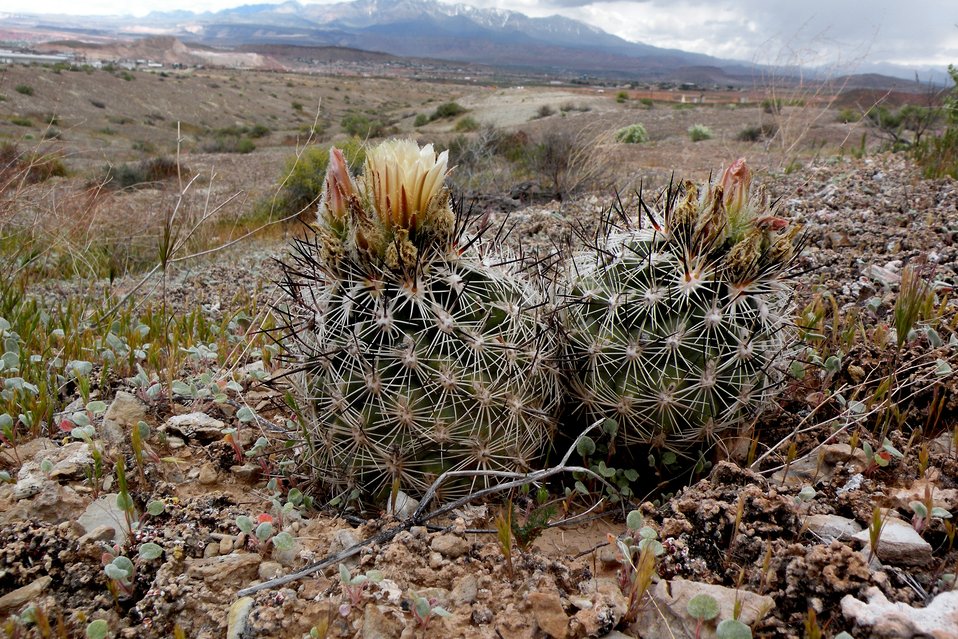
Siler pincushion cactus found on the White Dome Nature Preserve in Utah. The Siler pincushion is a globally rare and federally listed species.